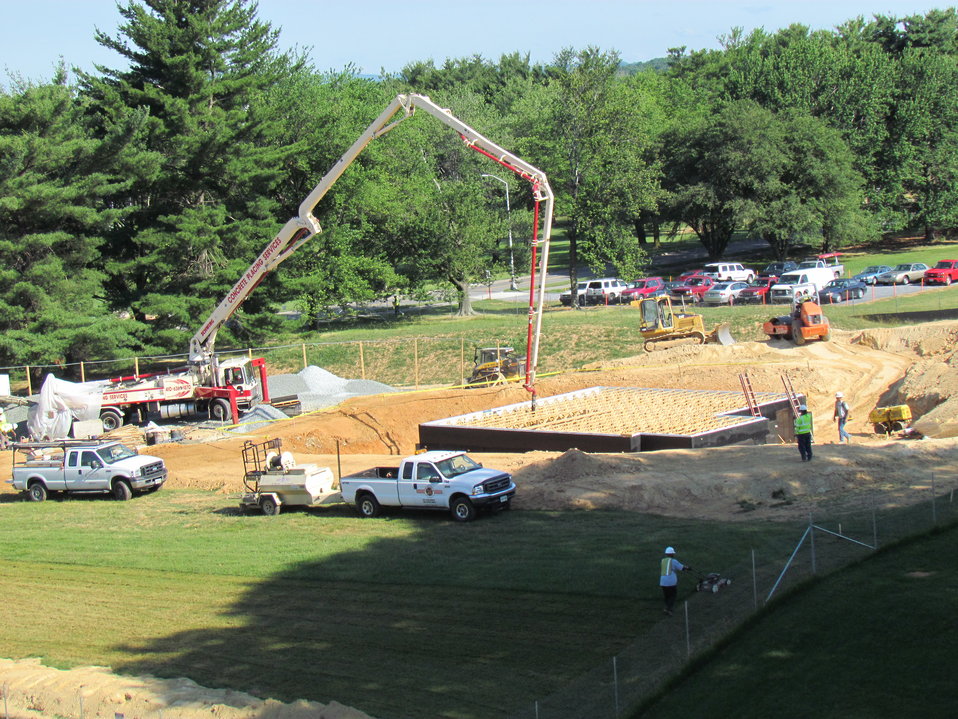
Net-Zero Energy Residential Test Facility - Concrete pumper being used to transport concrete to basement for the pouring of the basement slab.